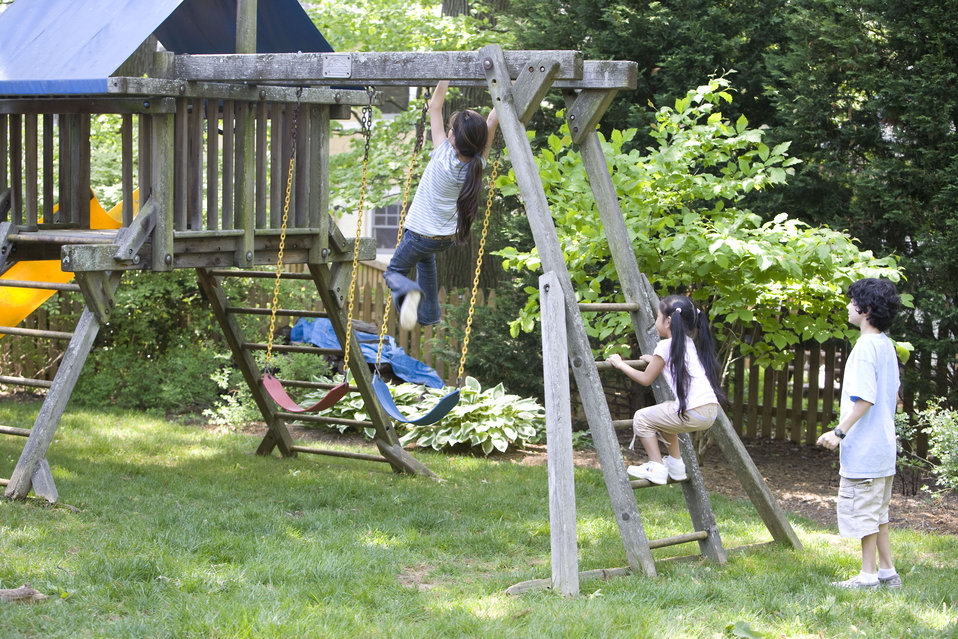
Children love playing outside, and these children were thoroughly enjoying their wooden swing set, and all were having fun in the fresh outdoor air, and the beautiful weather. It's important to note that older wooden playsets may have been treated with arsenic and/or creosote, and therefore, parents need to know if these chemicals were used in their manufacture.